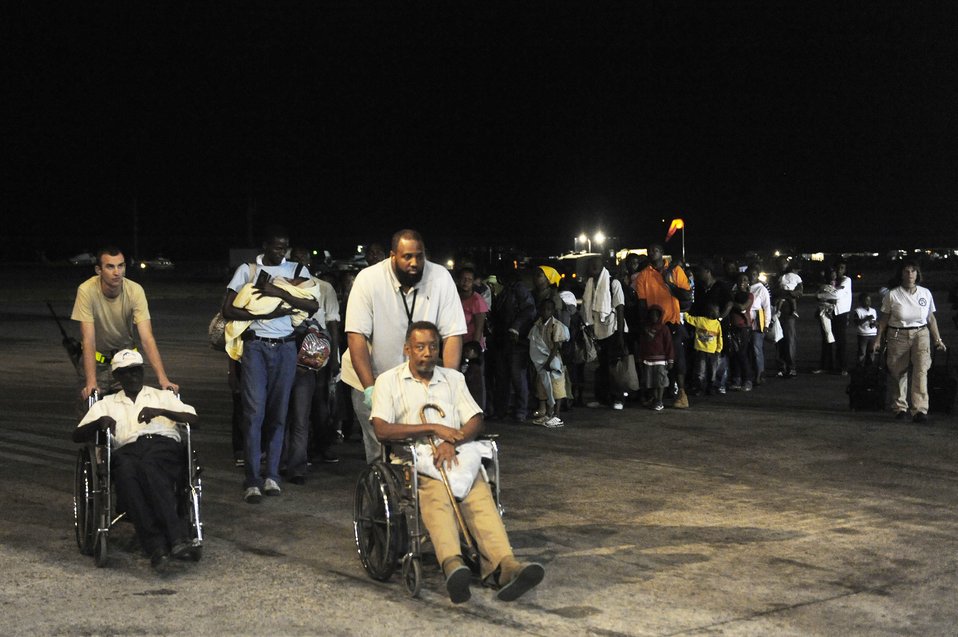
Returning

U.S. citizens in Haiti board a C-17 Globemaster III for a flight back to the United States Jan. 20, 2010 at Toussaint L'Ouverture International Airport in Port-au-Prince, Haiti.. The U.S. Air Force is flying U.S. citizens in Haiti back to the states following an earthquake Jan. 12 that leveled much of the country's infrastructure.